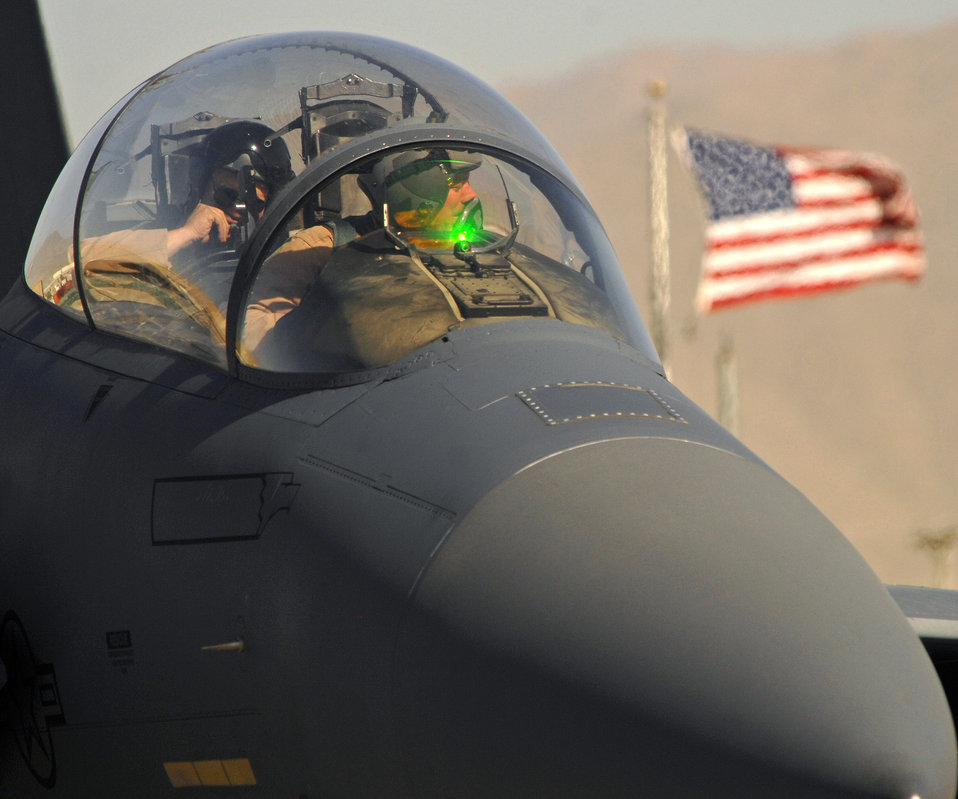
Wing surpasses combat hour milestone

An F-15E Strike Eagle pilot and weapon system operator from the 336th Expeditionary Fighter Squadron at Bagram Airfield, Afghanistan, prepare to take off June 9 for a close-air-support mission. In May, aircrews from the 336th EFS and the 74th EFS, who fly A-10 Thunderbolt IIs, together logged a total of more than 5,000 combat flight hours over Afghanistan. The aircraft assigned here provide close-air support and airborne intelligence, surveillance and reconnaissance for American and coalition ground troops.